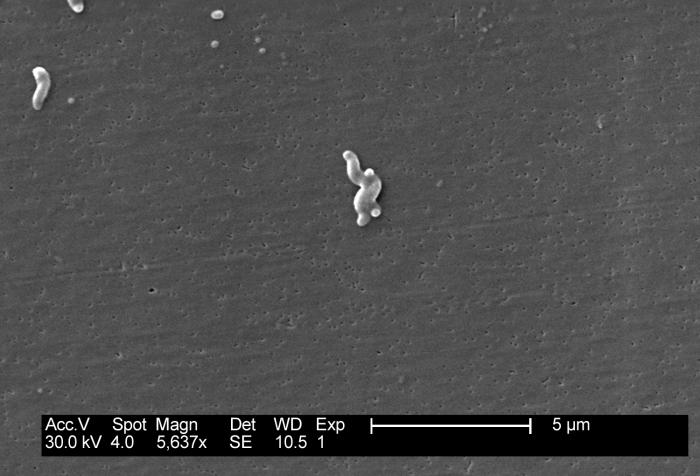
This scanning electron micrograph depicts a number of Gram-negative Campylobacter jejuni bacteria, magnified 5,637x.